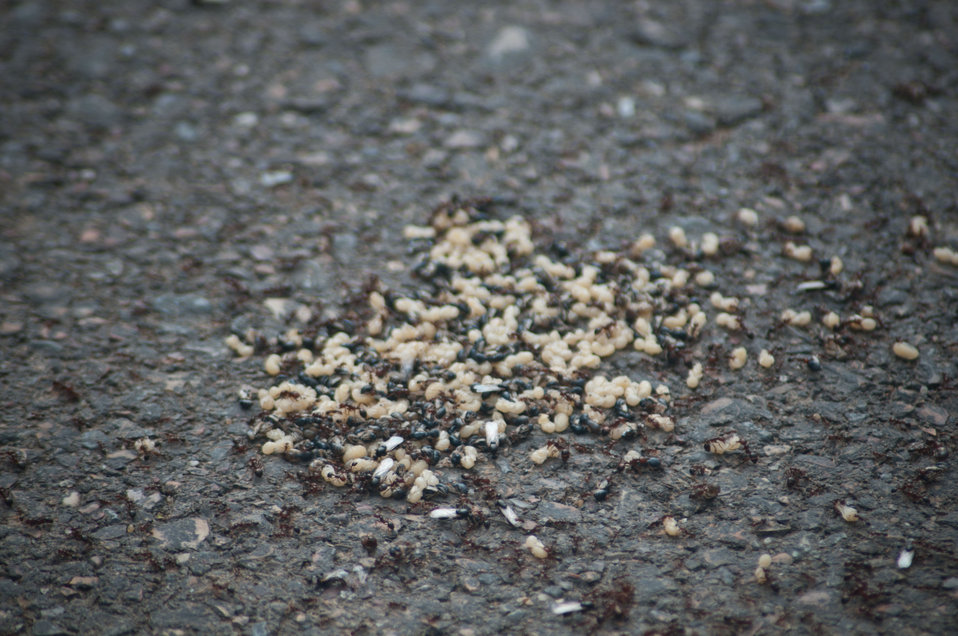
To save their nest, fire ants relocate their eggs onto the dry roadway after their home was threatened by rising Mississippi River floodwaters in the Yazoo River area of Satartia, MS, on Monday, May 16. 2011.